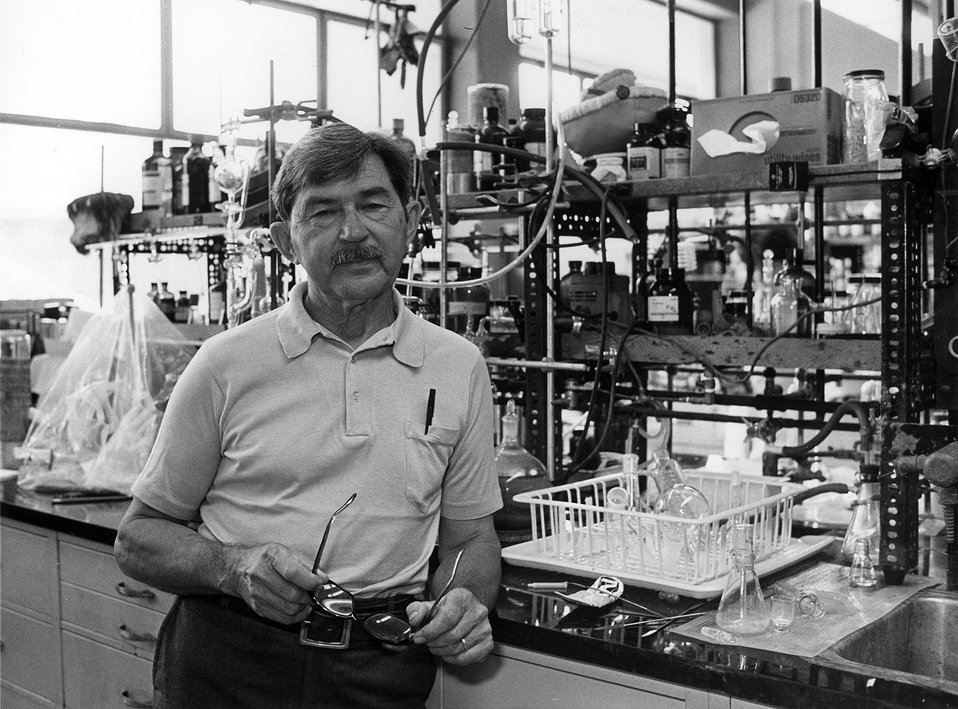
Henry Taube. Nobel Prize for Chemistry, 1983.